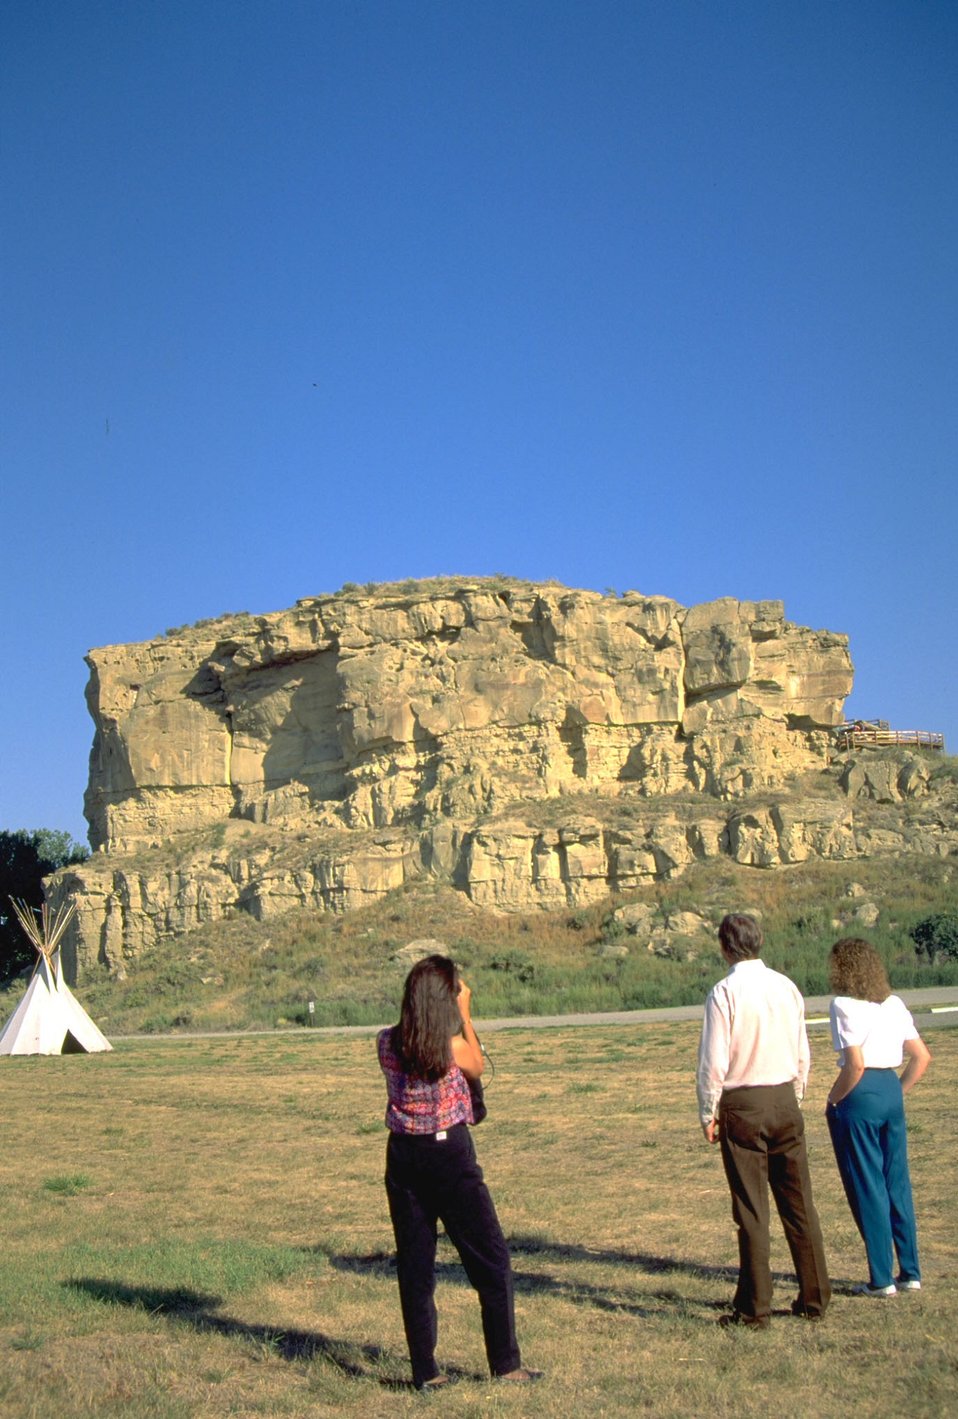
Pompeys Pillar with teepee and people